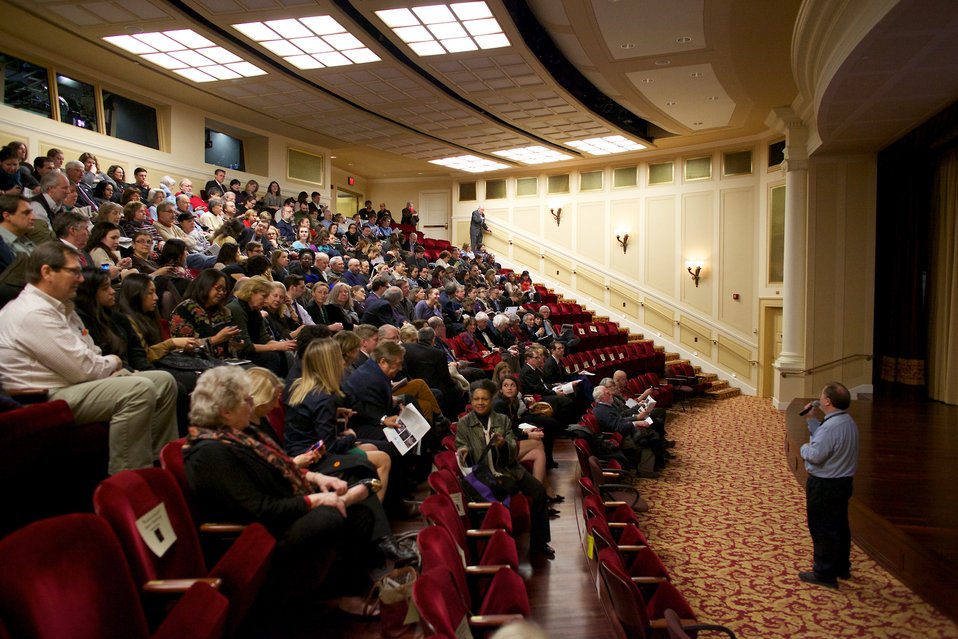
Monuments Men Public Screening

Monuments Men Public ScreeningMonuments Men Public Screening; Audience fills the theater before the event